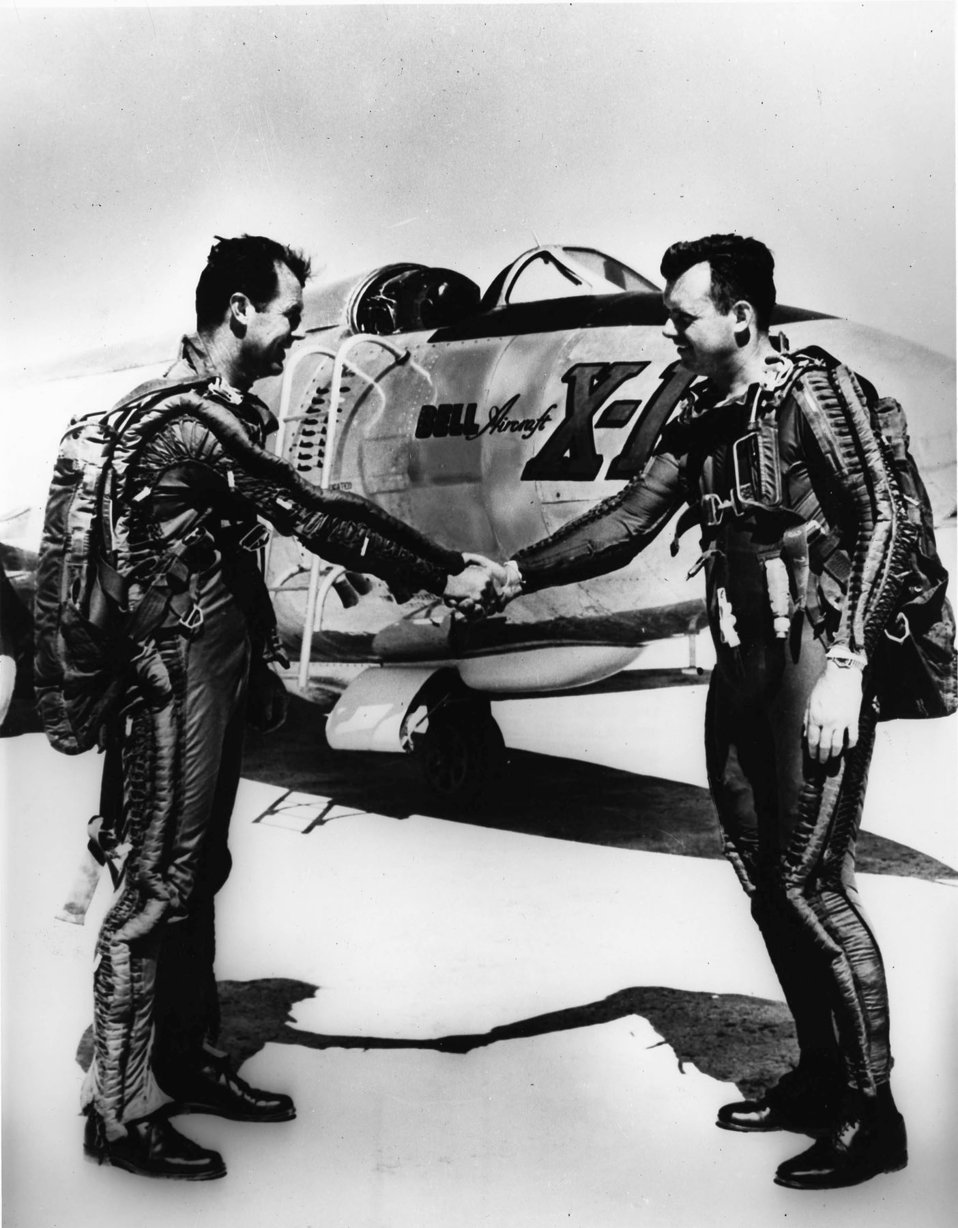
Capt. Chuck Yeager with Maj. Arthur Murray and the X-1A.